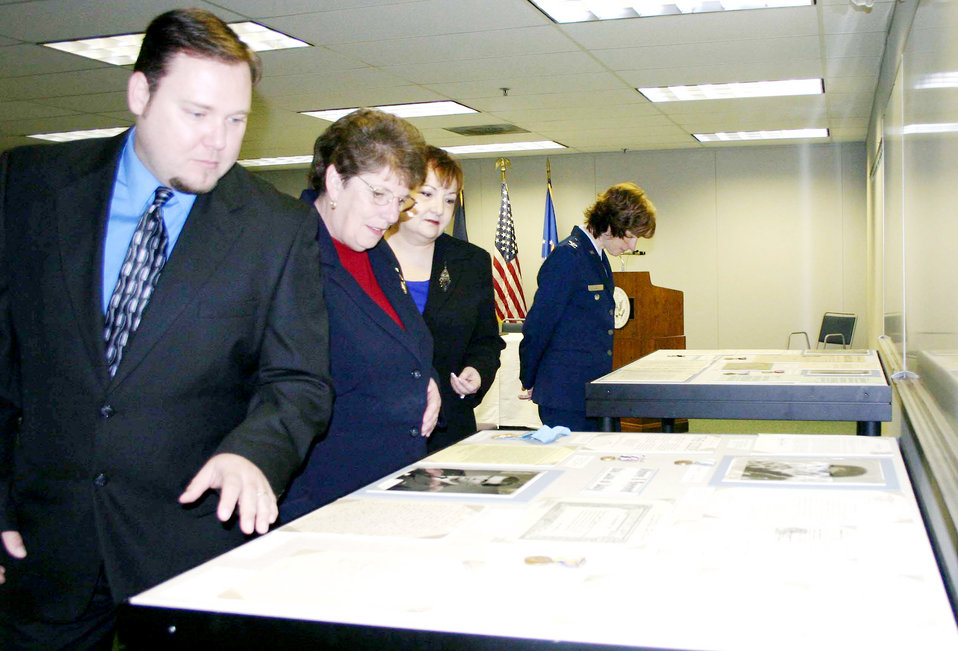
Records transfer marks historic milestone

Mike Green (left to right), Jo Hogue, Barbara Duggan and Col. Julie Robel review some of the original military personnel files of Air Force pioneers on display at the National Personnel Records Center during a ceremony Nov. 18, 2009 in St. Louis. The ceremony marked the historic transfer of ownership of approximately 177,000 official military personnel files from the Air Force to the National Archives and Records Administration.